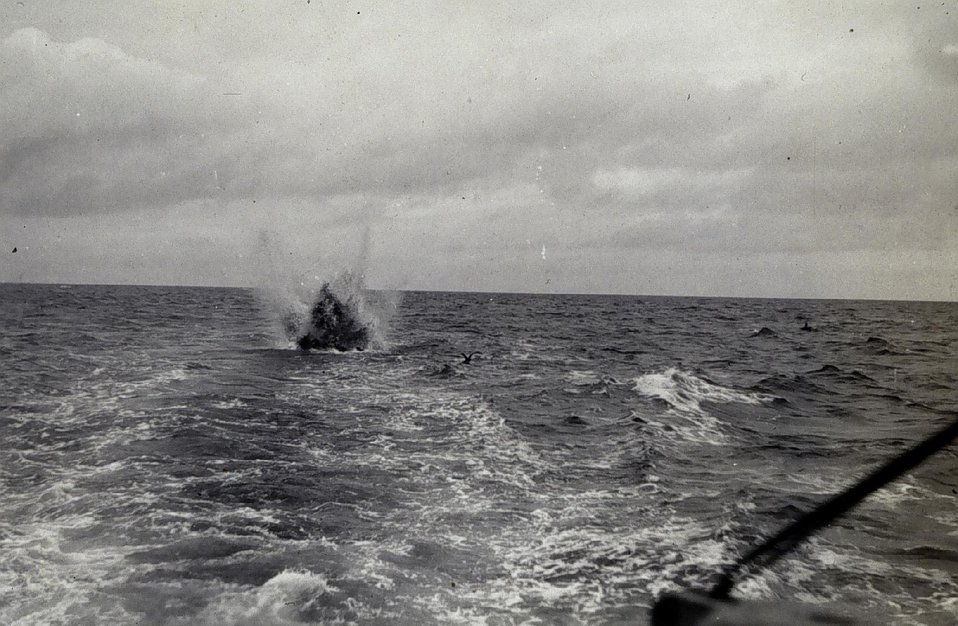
RAR bomb being exploded astern of GUIDE. North shore of Unimak Island